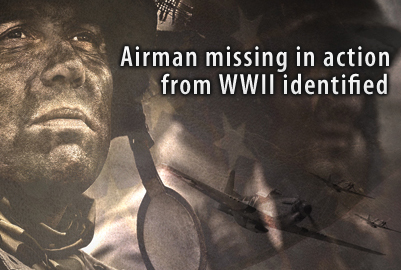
Missing WWII Airman found